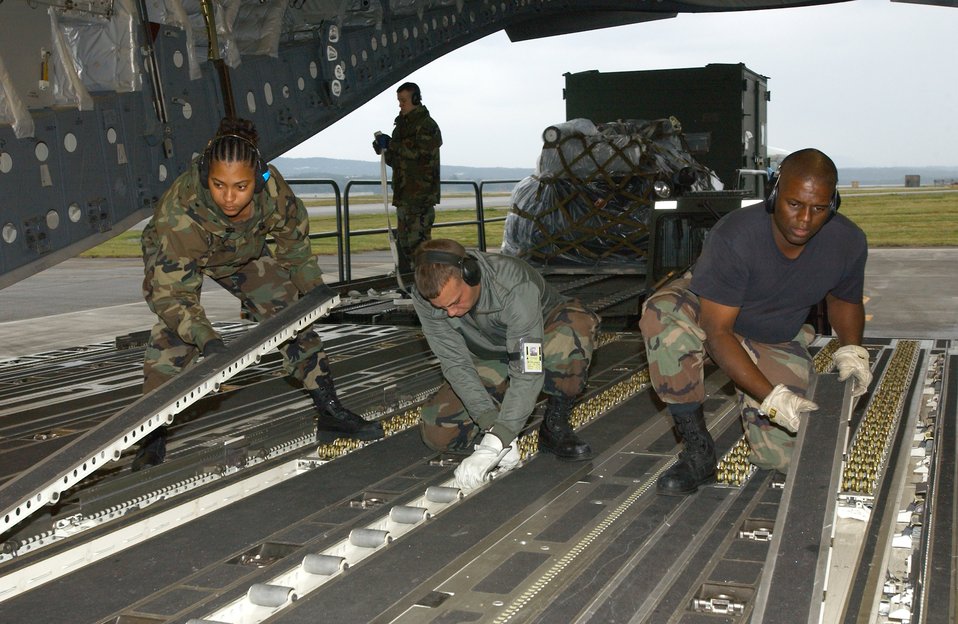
Unified Assistance

KADENA AIR BASE, Japan -- Senior Airman Aqueelah Lucas (left), Airman 1st Class James Miller, and Staff Sgt. Robert Carter, reconfigure the floor of a C-17 Globemaster III here to accommodate pallets of equipment for Banda Ache, Indonesia, Jan. 9. The 615th Air Mobility Operations Group, from Travis Air Force Base, Calif., will be providing aircraft support for the ongoing humanitarian relief in wake of the tsunami disaster. The Airmen are deployed from the 733rd Air Mobility Squadron here.